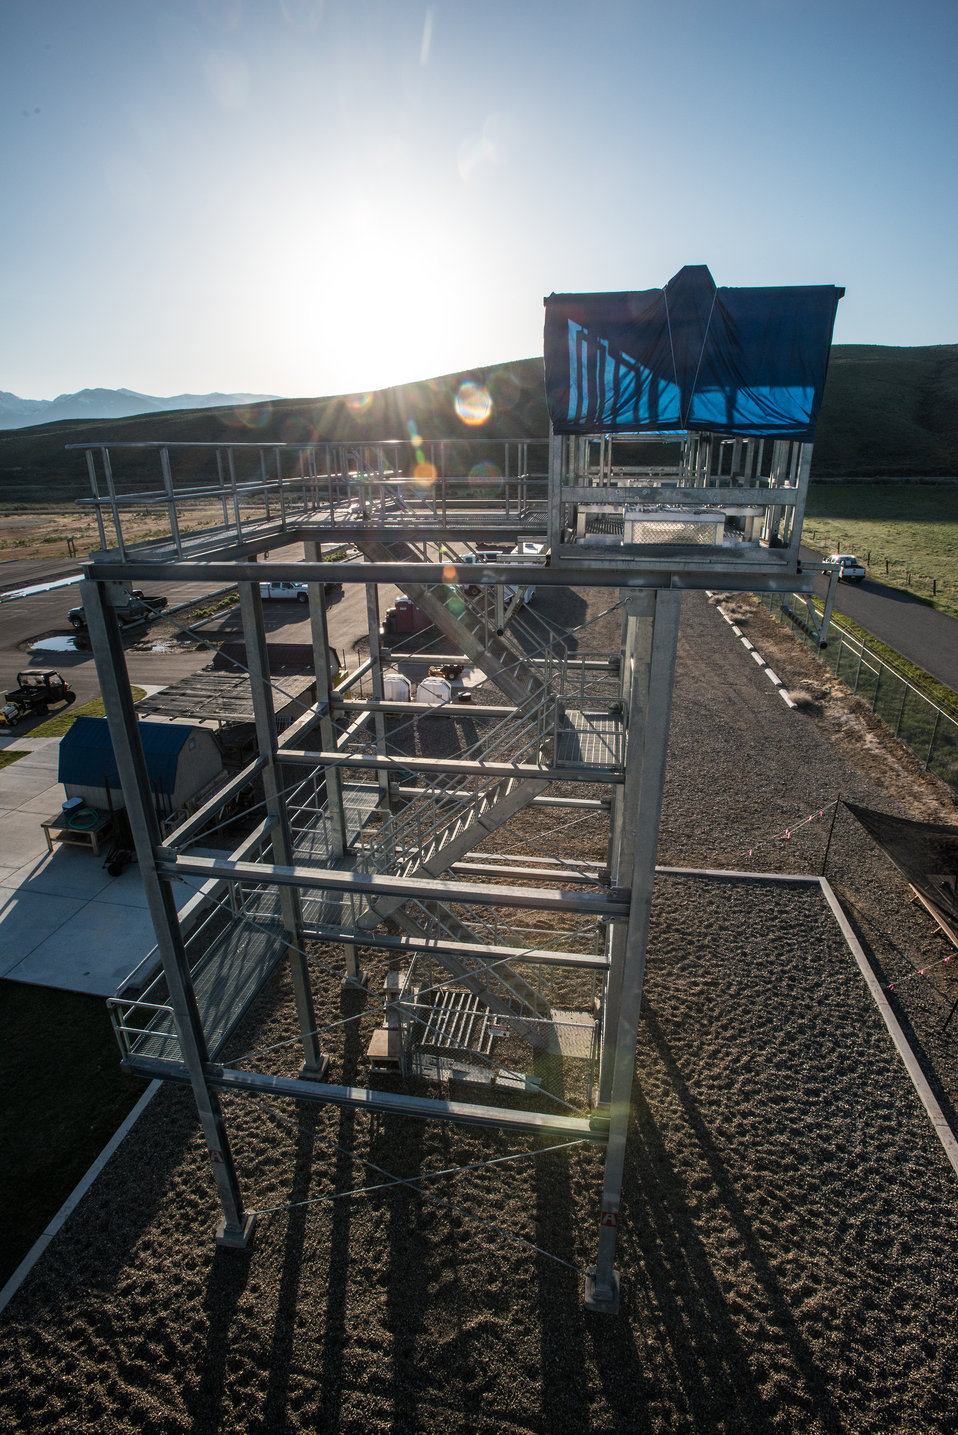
One of the two 40-foot rappel training towers that provide a safe simulation of a Bell 205 helicopter hovering over a landing zone, that wildland firefighters use to train and prepare at the U.S. Department of Agriculture (USDA) U.S. Forest Service (USFS) National Helicopter Rappel Program’s Rappel Academy at Salmon Air Base in Salmon, ID on Wednesday, May 14, 2014. From May 12, 2014, 72 veteran rappellers from all over the nation, 30 support staff, and three helicopters with flight crews attend the training at Salmon Air Base. Participants will rappel into the Perreau Creek area. The annual training is delivered in accordance with the National Rappel Operations Guide; strengthen leadership, teamwork, and communications within the rappel community, and produces quality aerial delivered firefighters for use in fire and aviation operations. The USDA Forest Service National Helicopter Rappel Program’s primary mission is initial attack. Rappel crews may be utilized for large fire support, all hazard incident operations, and resource management objectives.